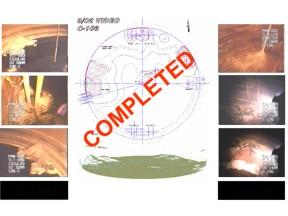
Hanford tank cleanup activities

Different techniques are used to retrieve and cleanup the tanks depending on the make-up of materials contained therein. For example, at Hanford a Sluicing and Acid Dissolution Technology was used to complete cleanup at tank C-106.